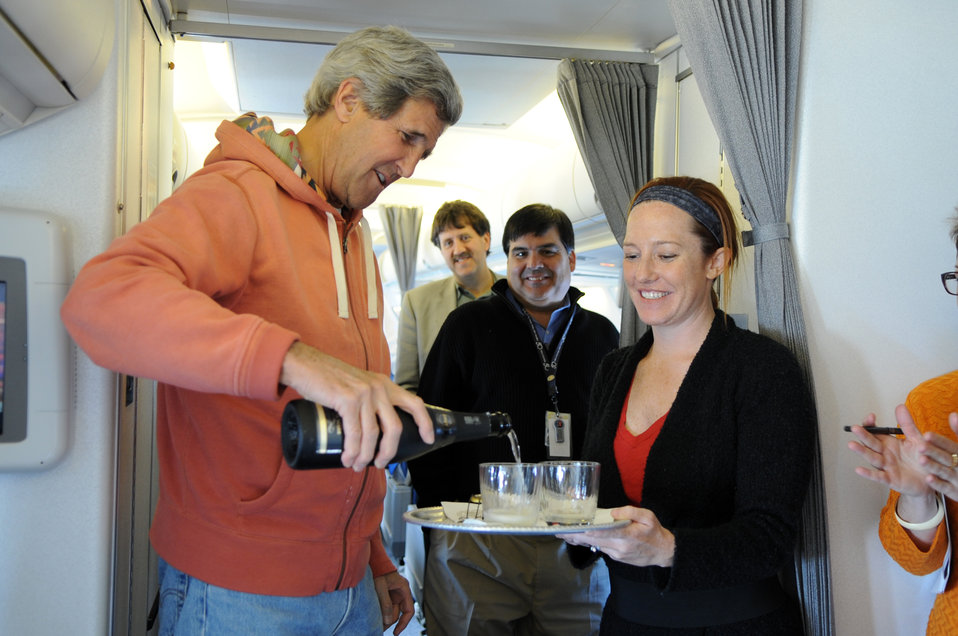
Secretary Kerry Celebrates First Briefing by Spokesperson Psaki En Route to Stockholm, Sweden

U.S. Secretary of State John Kerry uncorks a bottle of champagne en route from Andrews Air Force Base to Stockholm, Sweden as he celebrates the first press briefing at the U.S. Department of State Department by his new Spokesperson, Jen Psaki, on May 13, 2013.